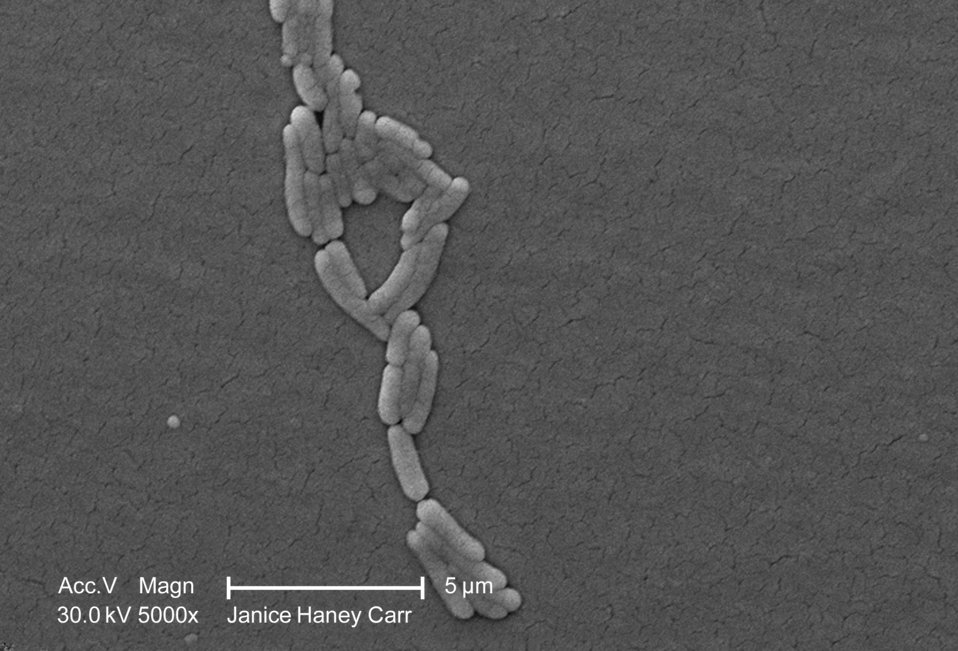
Under a moderate magnification of 5000X, this scanning electron micrograph (SEM) revealed the presence of numbers of clustered Gram-negative Salmonella typhimurium bacteria, that had been isolated from a pure culture. See PHIL 10975 for a colorized version of this image.What sort of germ is Salmonella?